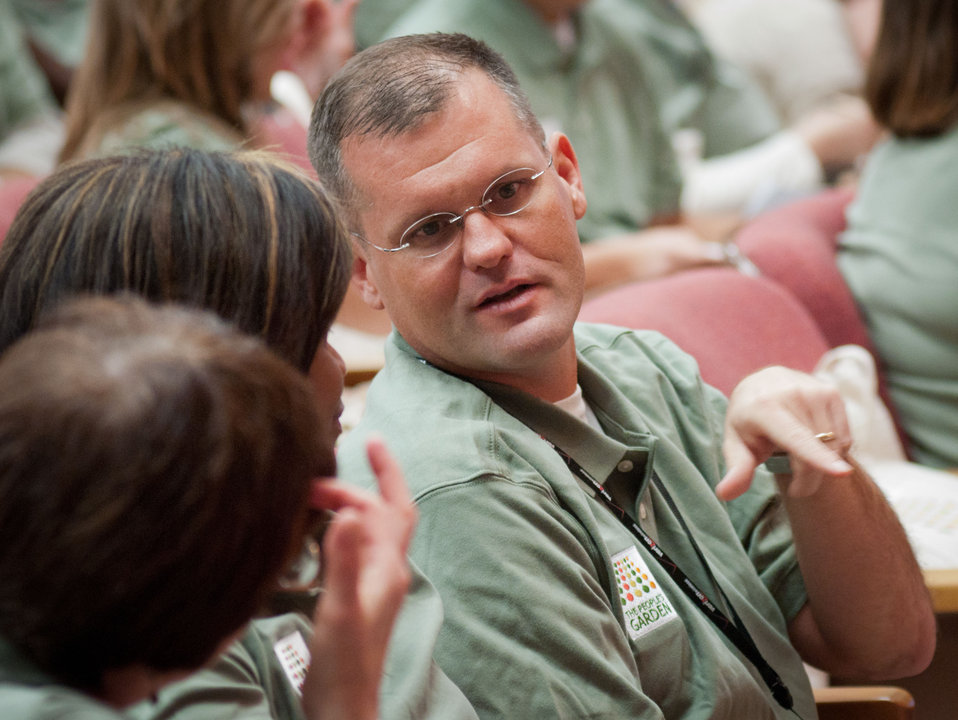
Graduation day of the 2011 U.S. Department of Agriculture (USDA) Executive Master Gardeners, on Tuesday, November 8, 2011 in Washington, DC. During the past six-weeks, students contributed 40-hours of volunteer time, completed studies and testing to receive their certificates today as an Executive Master Gardener. Many of the sessions occurred before work hours, during lunchtime or at community garden project sites such as Powell Middle School. USDA challenges its employees to establish People's Gardens at USDA facilities worldwide or in community gardens. People's Gardens vary in size and type, but all have a common purpose - to help the community and the environment. To learn about the People’s Garden Initiative visit www.usda.gov/wps/portal/usda/usdahome?contentid=peoples g....